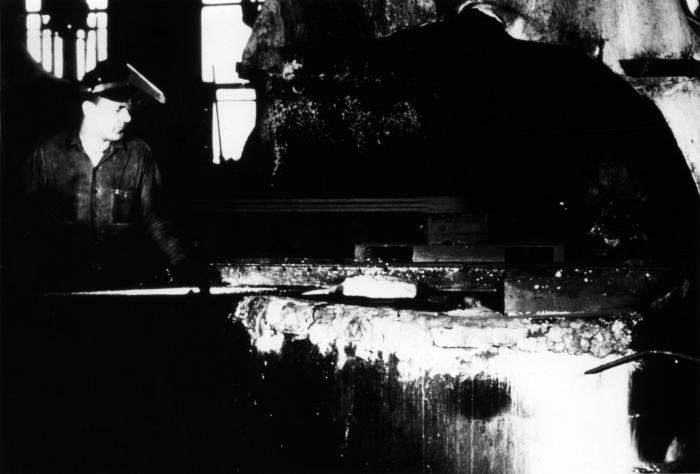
This historical photograph was provided by the Center for Disease Control's (CDC), National Institute for Occupational Safety and Health (NIOSH). The image depicted an employee in a Cincinnati, Ohio lead smelting plant. Note that the worker was not using respiratory protection, and had lifted his protective face shield, therebu, further exposing himself to lead poisoning, as well as being burnt by any spattereing debris.Workers can be exposed to lead through inhalation of fumes and dusts, as well as through ingestion as a result of lead-contaminated hands, food, drinks, cosmetics, tobacco products, and clothing. Furthermore, workers can take lead home on their clothes, skin, hair, tools, and in their vehicles, potentially exposing their families to this element's harmful health effects.